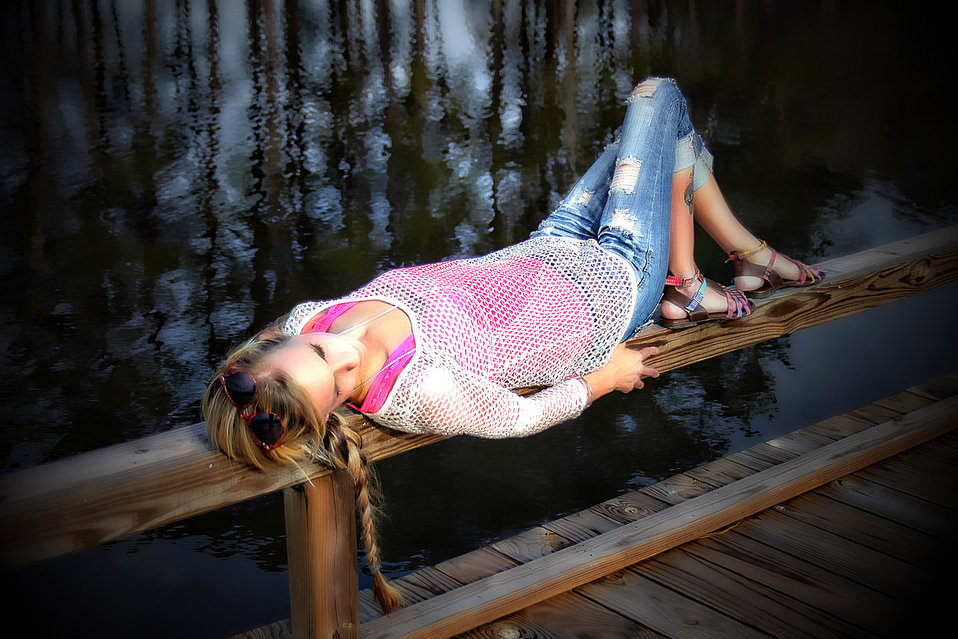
Girl portrait.